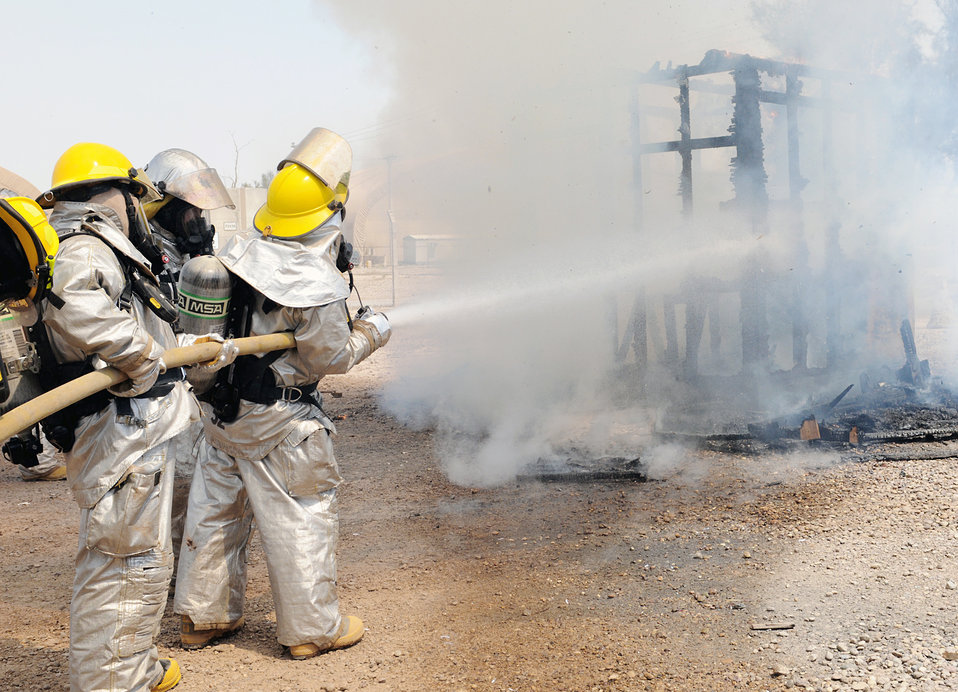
Iraqi firefighters training

Firefighters with the 332nd Civil Engineer Squadron stand by and aid Iraqi firefighters as they put out a fire April 30, 2010, at Joint Base Balad, Iraq. Seven volunteer firefighters from Bakir Village have trained with the JB Balad firefighters over several weeks.